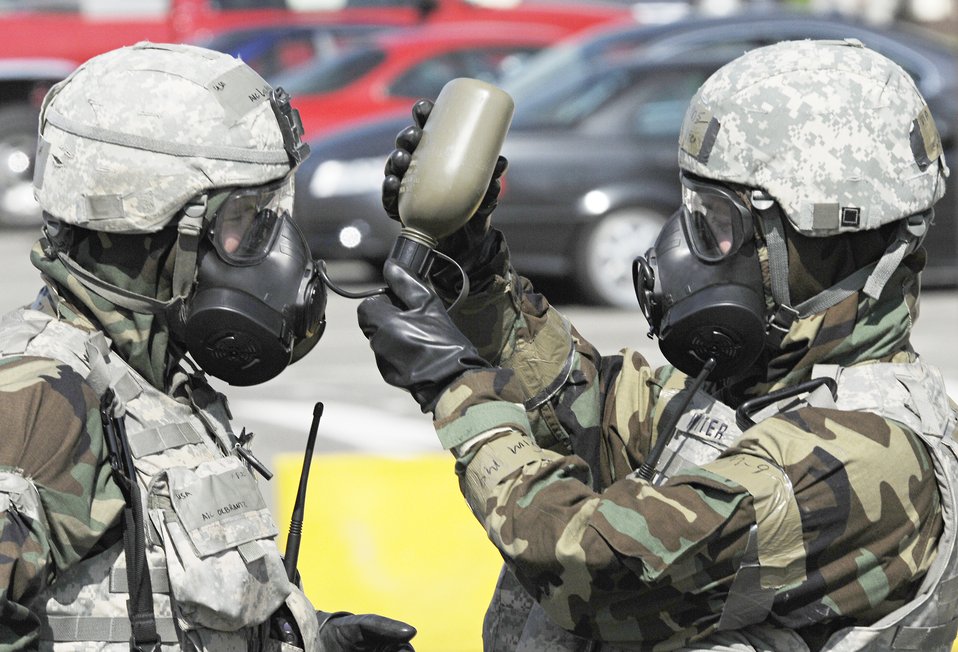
The pause that refreshes

Senior Airman Geoffrey Witter (right) helps his wingman, Airman 1st Class Lenjie Olbrantz, get a drink of water using the M-50 mask drinking tube April 28, 2010, during Operation Saber-Crown at Spangdahlem Air Base, Germany. The exercise was conducted to evaluate the 52nd Fighter Wing's ability to deploy rapidly.